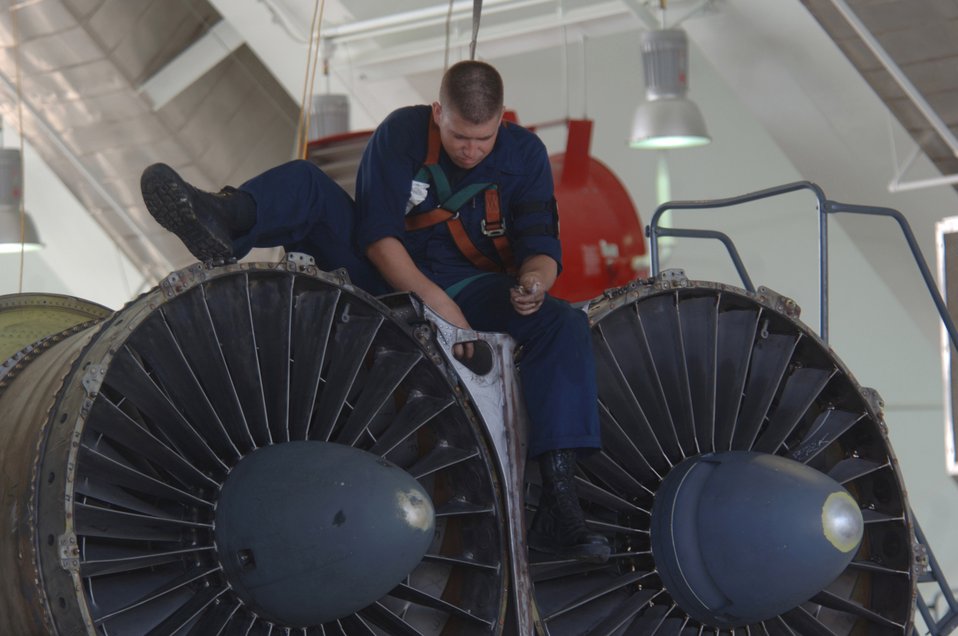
Final inspection

ANDERSEN AIR FORCE BASE, Guam (AFPN) -- Senior Airman Tommy Taylor inspects the engine of his B-52 Stratofortress aircraft during phase maintenance at Hangar 1 here. Airman Taylor is with the 2nd Maintenance Squadron at Barksdale Air Force Base, La. The B-52s come here from a forward-deployed location and go into phase maintenance after 300 flying hours. The $34-million hangar is the newest in the Air Force and can house any type of Air Force aircraft.